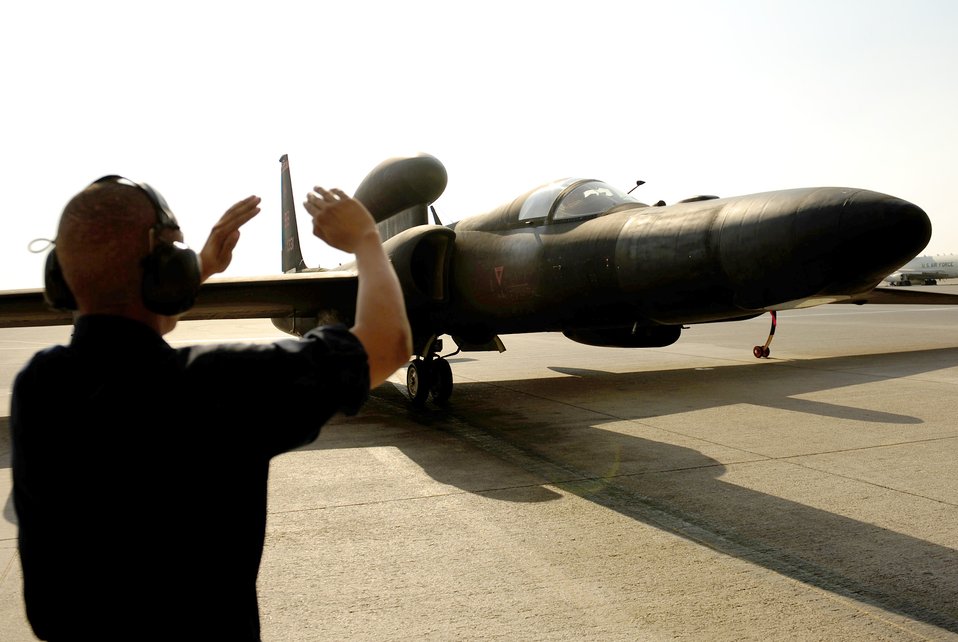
Technicians work on the Dragon Lady

Airman 1st Class Colin Cortez signals to the U-2 Dragon Lady pilot after a flying mission Nov. 23, 2010, at an air base in Southwest Asia. Airman Cortez is a U-2 crew chief assigned to the 380th Expeditionary Aircraft Maintenance Squadron.